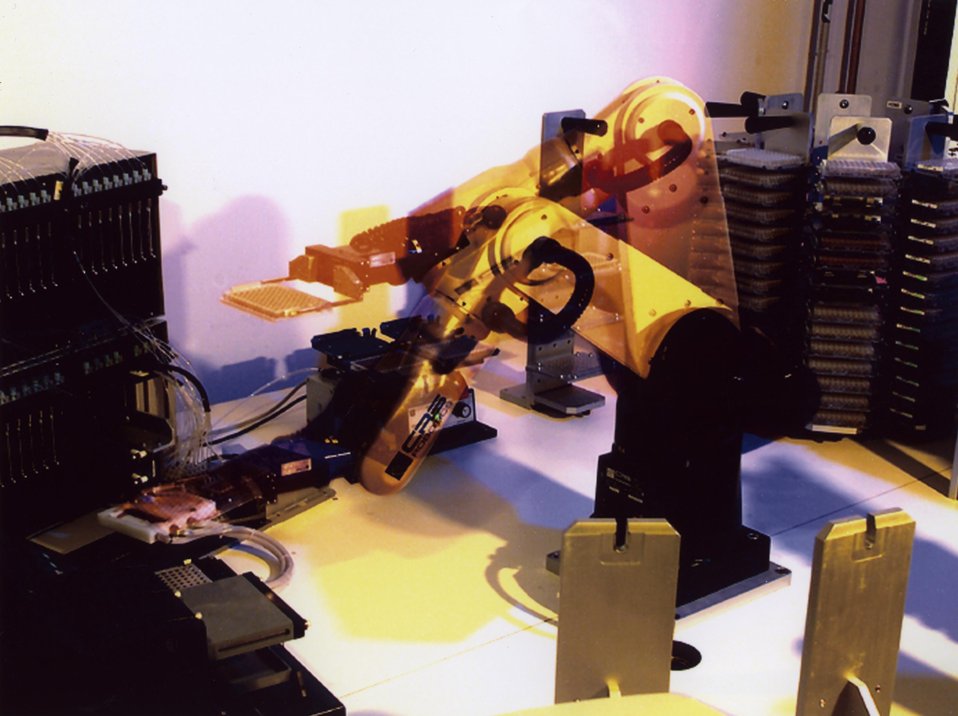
THE ROBOT MADE BY CRS INC. AS IT ISOLATES DNA SAMPLES FROM CELLULAR DEBRIS FOR PURIFICATION AND SEQUENCING.
THE JOINT GENOME INSTITUE, LOCATED NEAR LLNL, A COLLABORATION OF LLNL, LBNL AND LANL, IS AN OUTGROWTH OF THE EARLIER WORK DONE IN HUMAN GENETICS BY DOE'S NATIONAL LABS AND THEIR INVOLVEMENT IN THE WORLDWIDE HUMAN GENOME PROJECT. THE AIM IS TO DECODE THE ENTIRE SEQUENCE OF A REFERENCE 3 BILLION DNA BASES (THE AMOUNT THAT IS A SINGLE CELL'S NUCLEUS), CALLED THE GENOME, AND TO APPLY THIS KNOWLEDGE TO IMPROVE MEDICINE, HEALTH CARE, AND OTHER AREAS OF BIOLOGICAL SCIENCE.